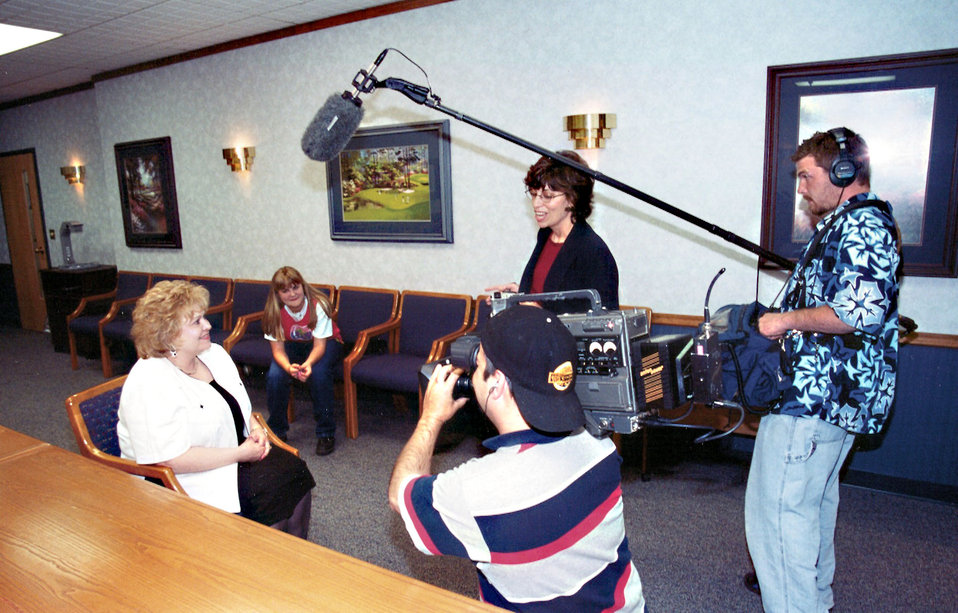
On the small screen

TINKER AIR FORCE BASE, Okla. -- Marilyn Petricek and her daughter, Savanna, watch a videotaped message from Oprah Winfrey before going to Chicago to be on